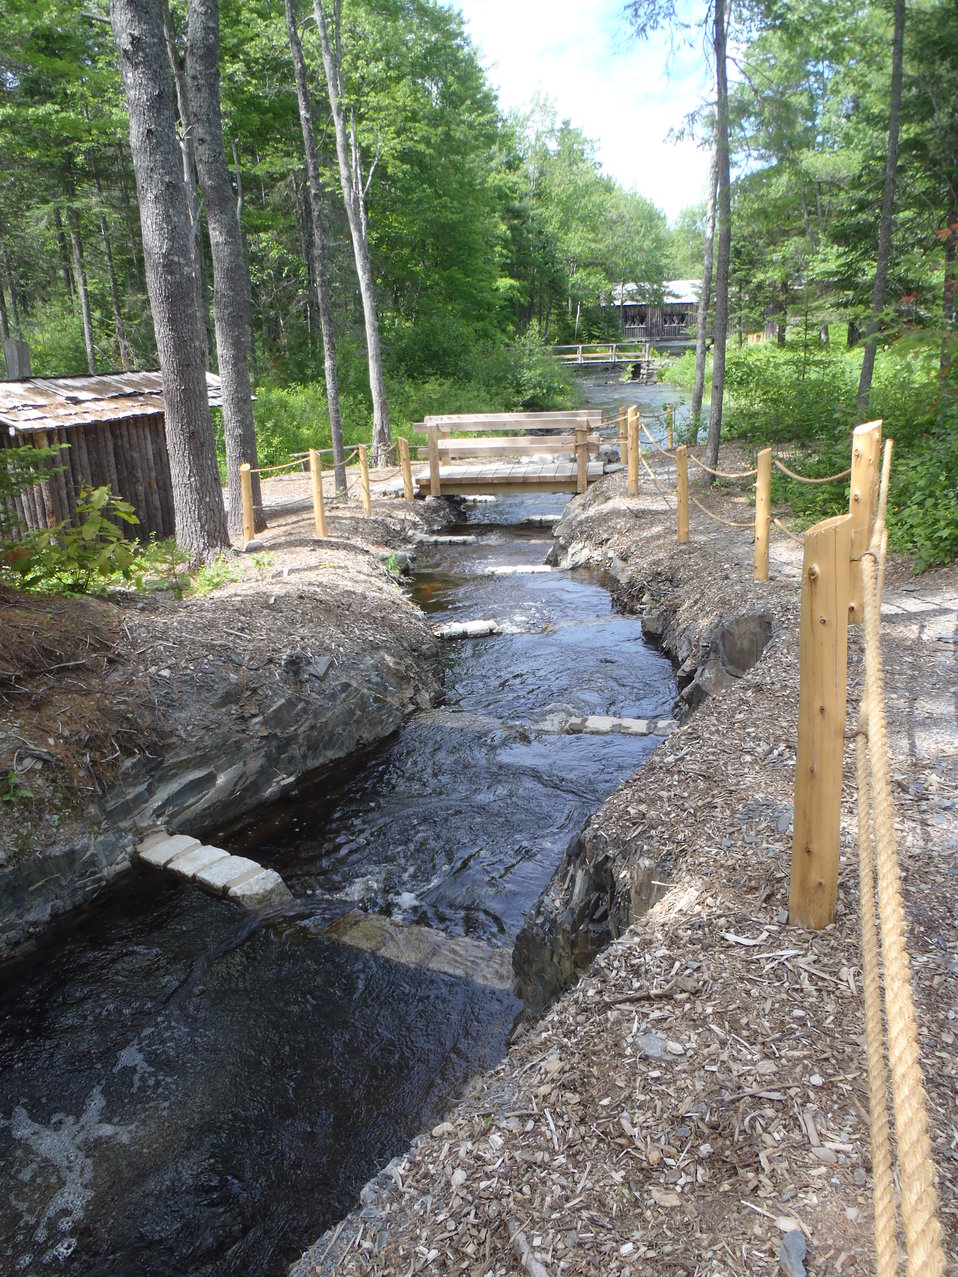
Fish ladder at a park in ME 2